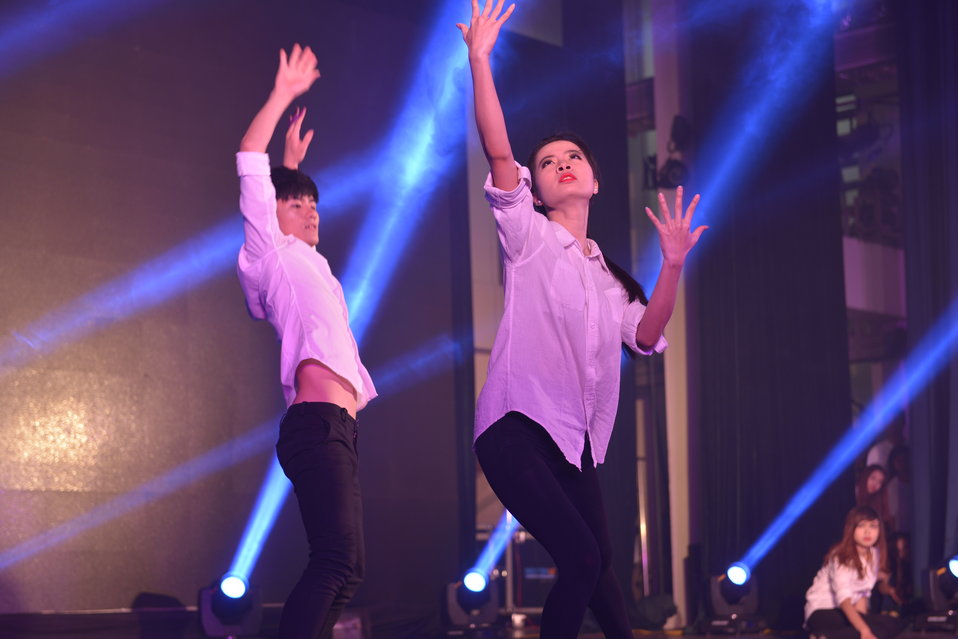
Performance at iSee LGBT Event

USAID Vietnam